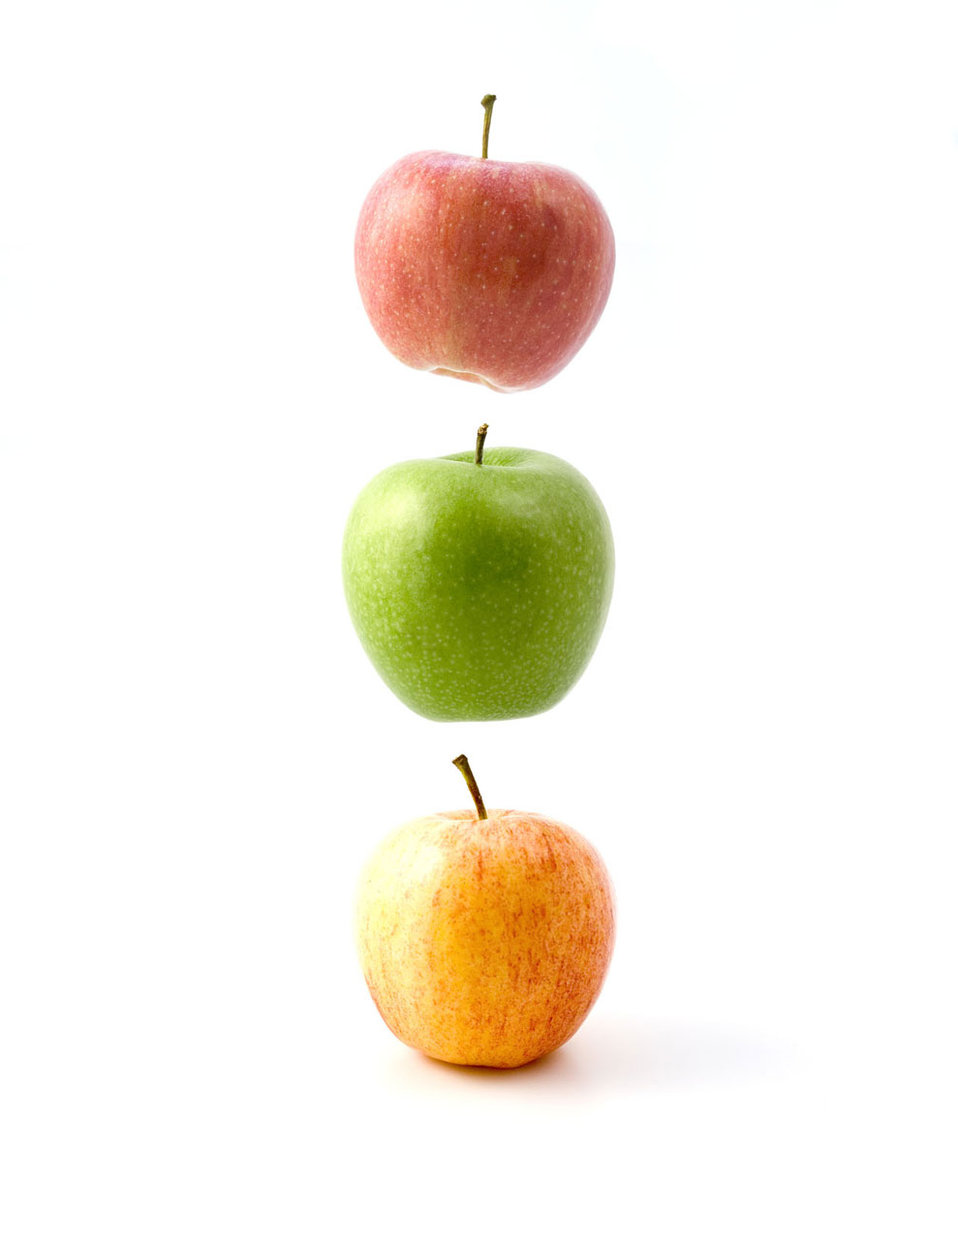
Levitating apples

Floating apples in traffic light colours..